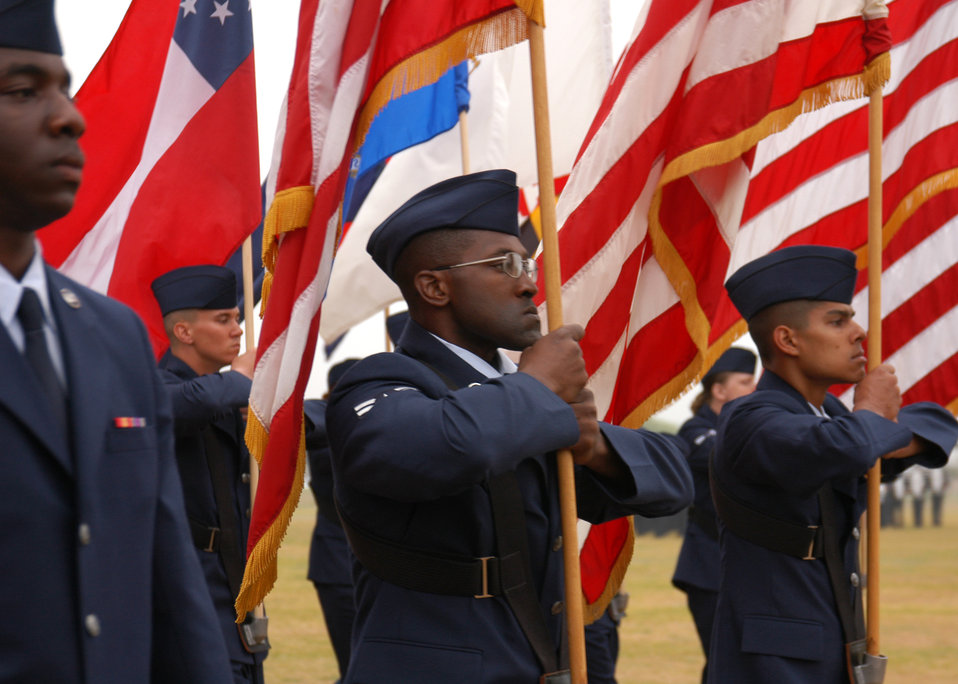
Air Force continues giving 100 percent

Air Force trainees carry U.S. and state flags with pride during their Basic Military Training graduation parade March 9 at Lackland Air Force Base, Texas. The Air Force met its monthly recruiting goals in January and February and continues to recruit quality men and women for more than 150 active-duty specialties in fields such as medical, aviation, engineering, mechanical, communications, security forces and special operations.